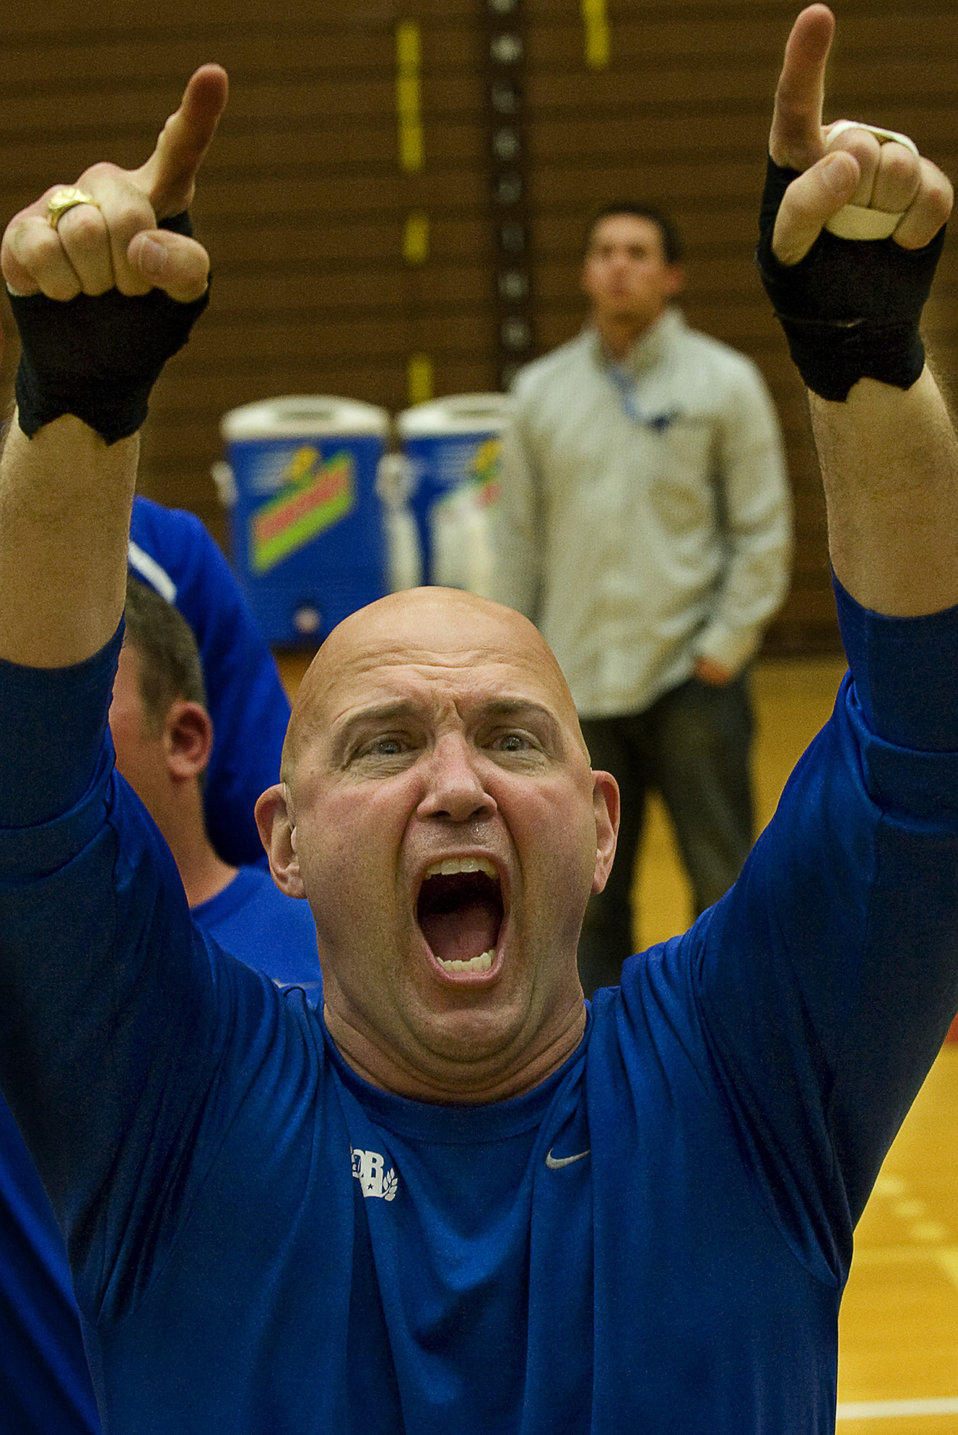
AF Basketball

Chief Master Sgt. Damian Orslene celebrates after the Warrior Games bronze medal match against the Navy May 12, 2010 at the Olympic Training Center, Colorado Springs. The Air Force went on to win the game 13-10. The Warrior Games competition began May 10 and finishes on May 14, 2010 at the U.S. Olympic Training Center in Colorado Springs.